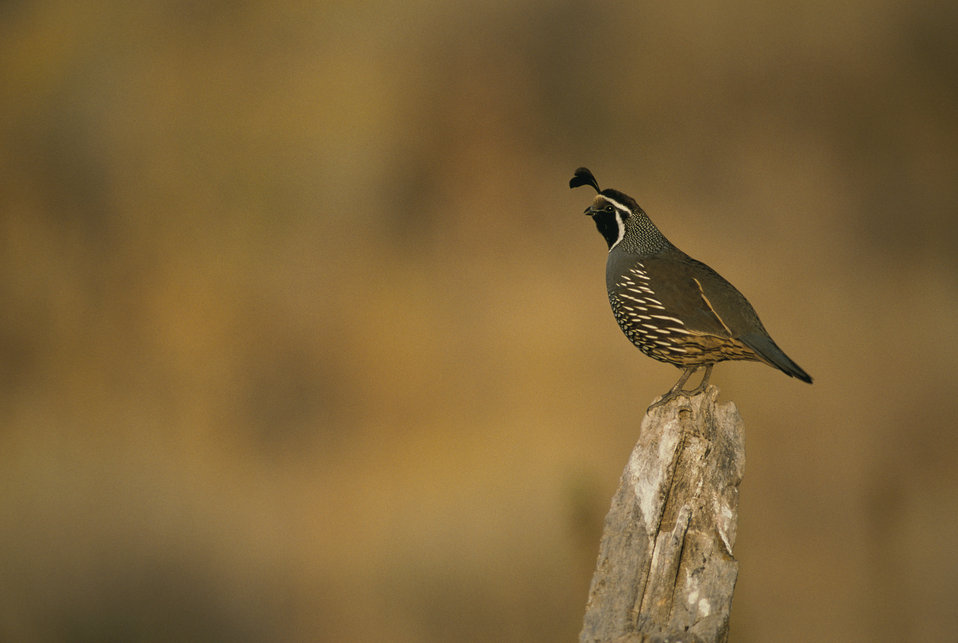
California quail standing in profile on fence post.